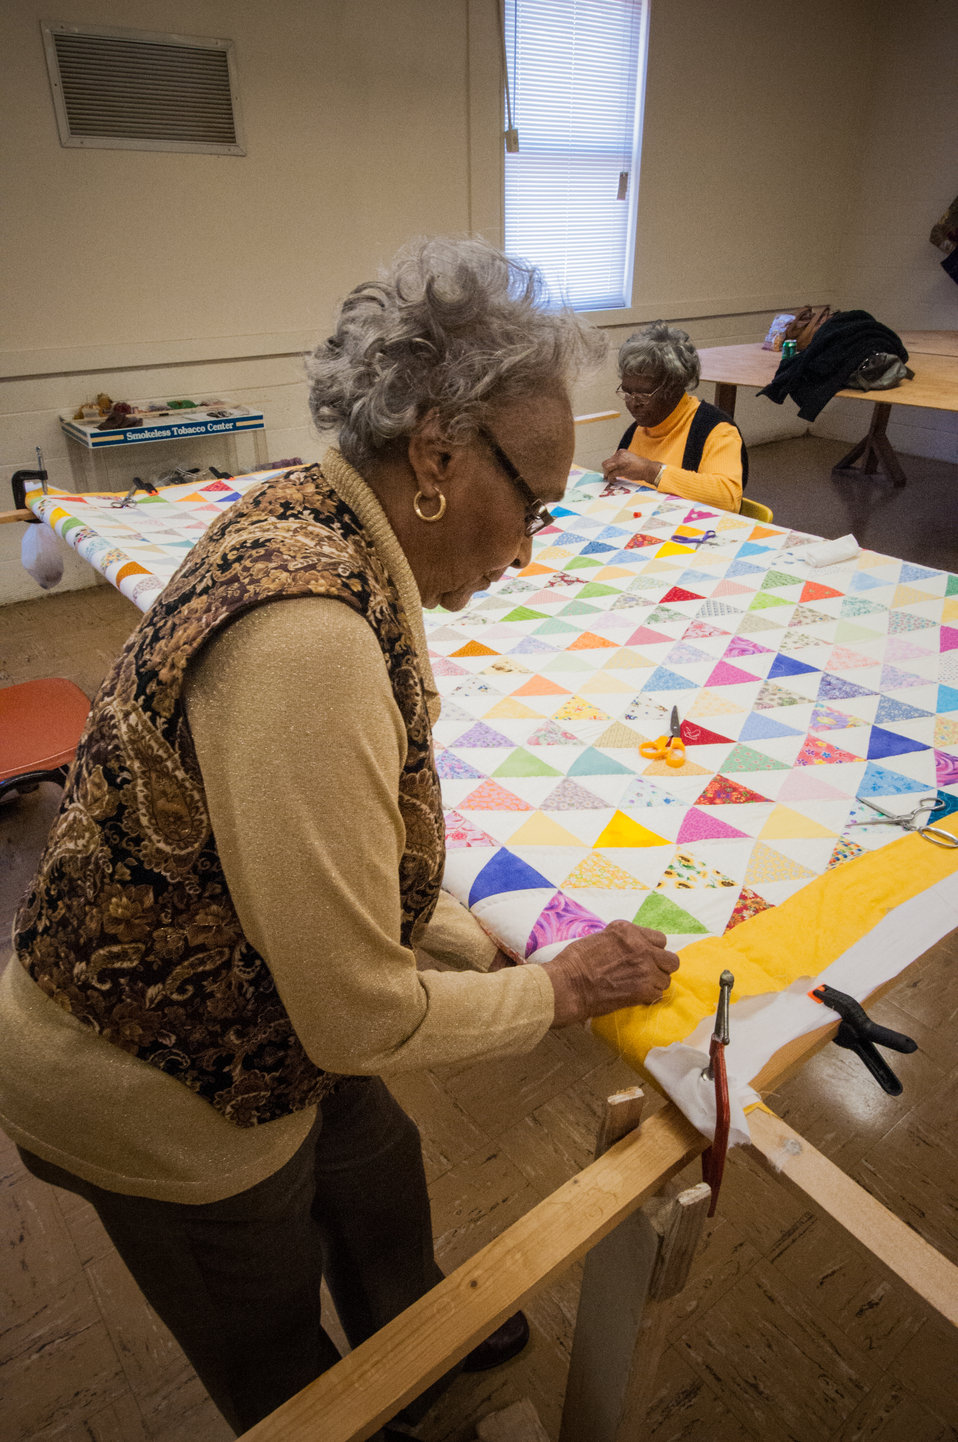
Mattie Vaughn and Mollie Hawkins work on a quilt for a King size bed at the East Baker Historical Society Community Center in Newton, Baker County, GA on Mar. 7, 2013. The East Baker Historical Society Community Center secured a U.S. Department of Agriculture (USDA) Rural Development (RD) Community Facilities (CF) Loan for the kitchen that enabled residents to prepare catered meals and to prepare and package food products. The USDA Strike Force Initiative has designated Baker County, GA as a Strike Force county selected to receive assistance to relieve persistent poverty in historically high-poverty counties.